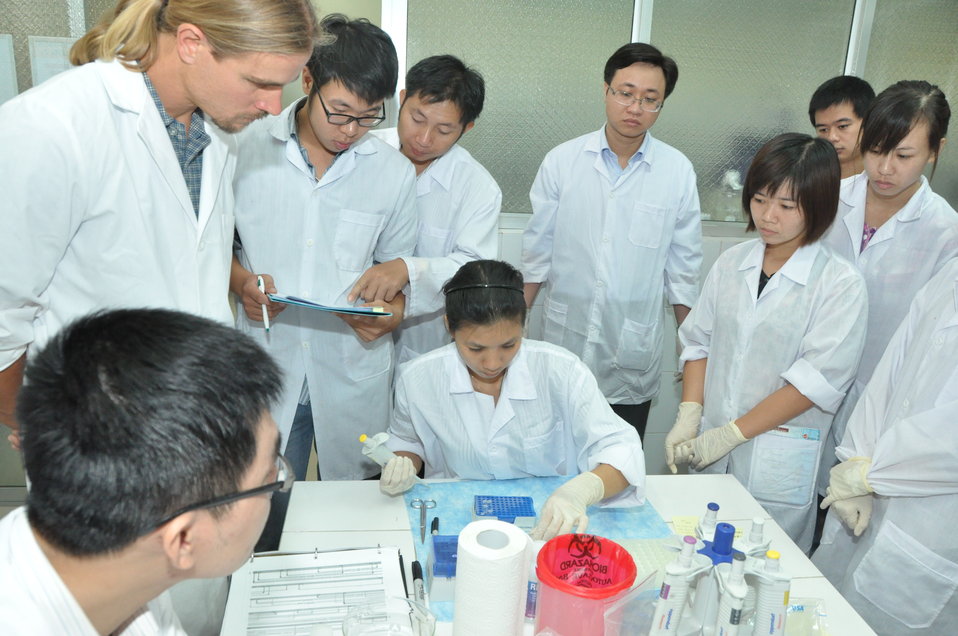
Animal virus detection lab training in Hanoi

Trainee learns how to detect viruses in Hanoi under a USAID program.